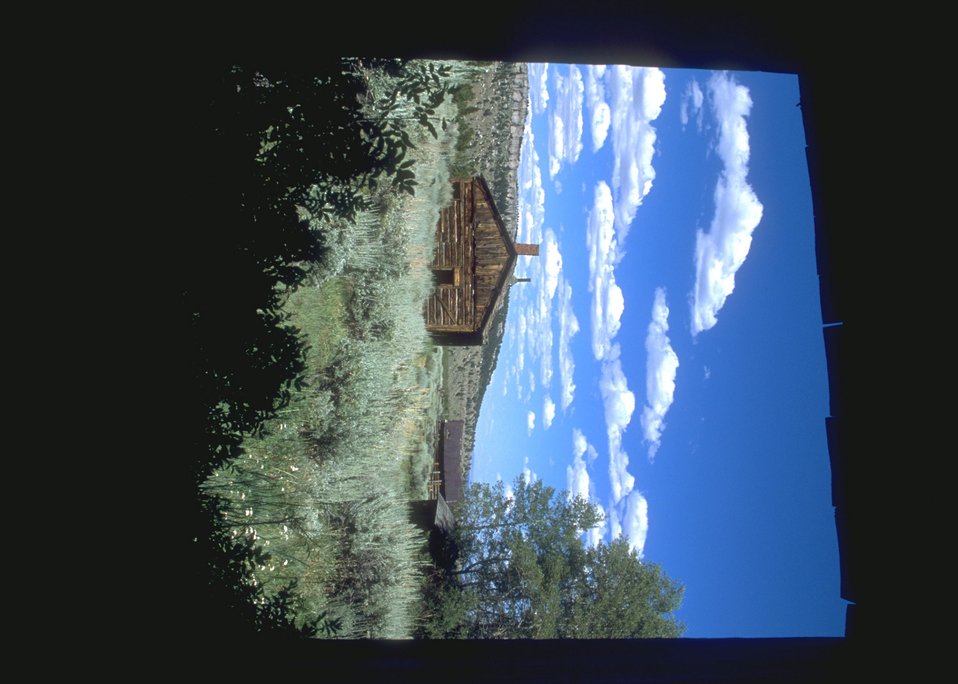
Structures at Miners Delight, Lander Field Office.